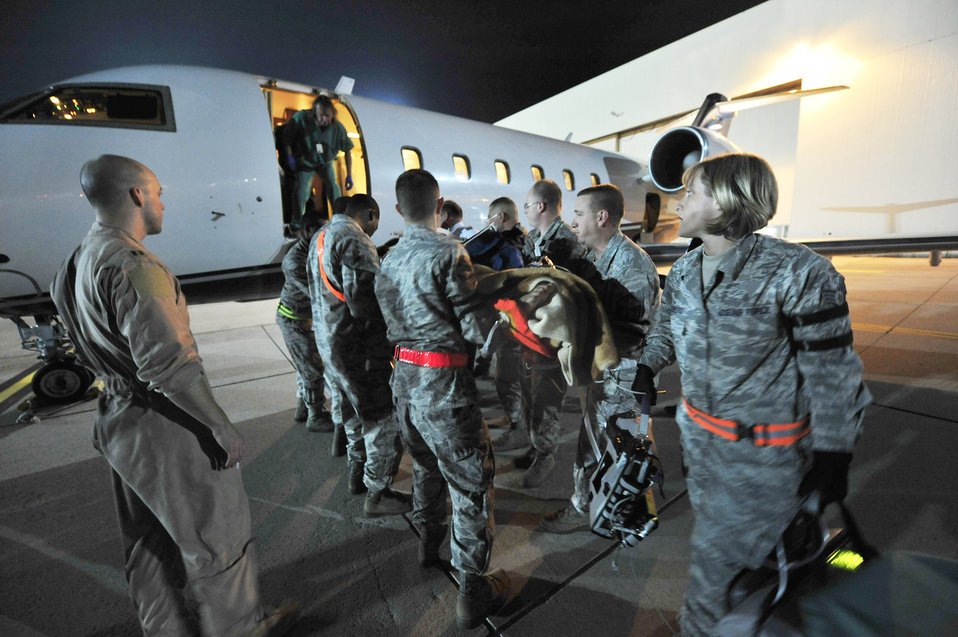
Airmen aid wounded Libyan fighters

Airmen from the 86th Aeromedical Evacuation Squadron and a critical care air transport team from Landstuhl Regional Medical Center load a wounded Libyan fighter onto a civilian aircraft for transport to a local German hospital Oct. 29, 2011, at Ramstein Air Base, Germany. At the request of the State Department and directed by the Secretary of Defense, U.S. Africa Command is supporting U.S. and international humanitarian relief efforts in Libya. Specifically, the U.S. military transported four wounded Libyans for treatment in medical facilities in Europe and 28 to facilities in the United States.